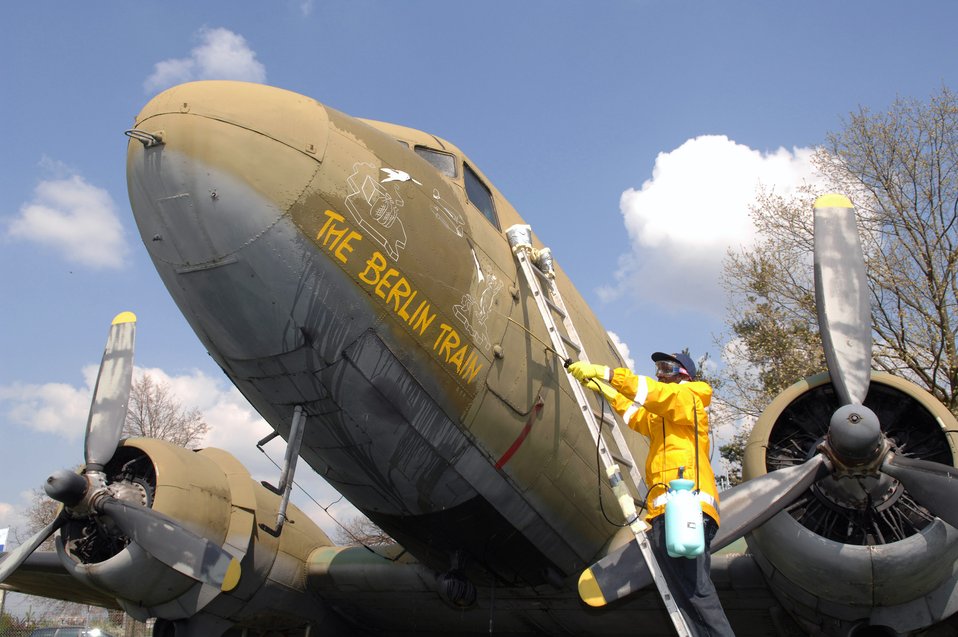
Airmen help restore Berlin Airlift memorial

Staff Sgt. Federico Hudson cleans the nose art on a static C-54 aircraft on display at the Berlin Airlift Memorial site at the former Rhein Main Air Base near Frankfurt International Airport in Germany. Sergeant Hudson and a team of approximately 30 volunteers from Ramstein AB spent three days cleaning the display aircraft for refurbishing in prepartion for a Berlin Airlift 60th Anniversary Celebration to take place there in June.